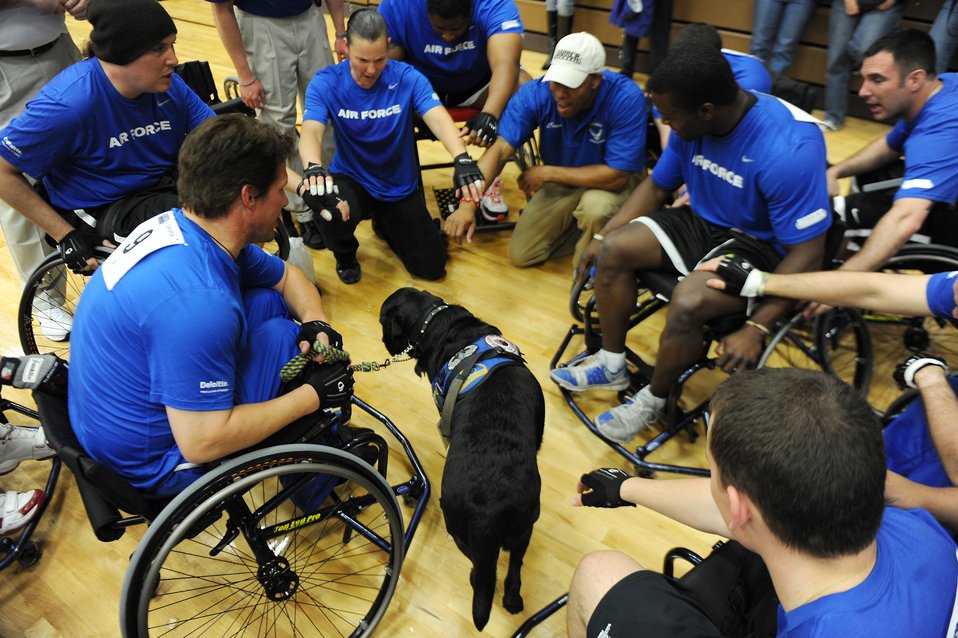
basketball prelims

Members of the Air Force wheelchair basketball team gather for a time out May 18, 2011, during the Warrior Games at the U.S. Olympic Training Center in Colorado Springs, Colo. Some 200 wounded warriors and disabled veterans from all of the military services competed in paralympic-style athletic events May 16 to 21.